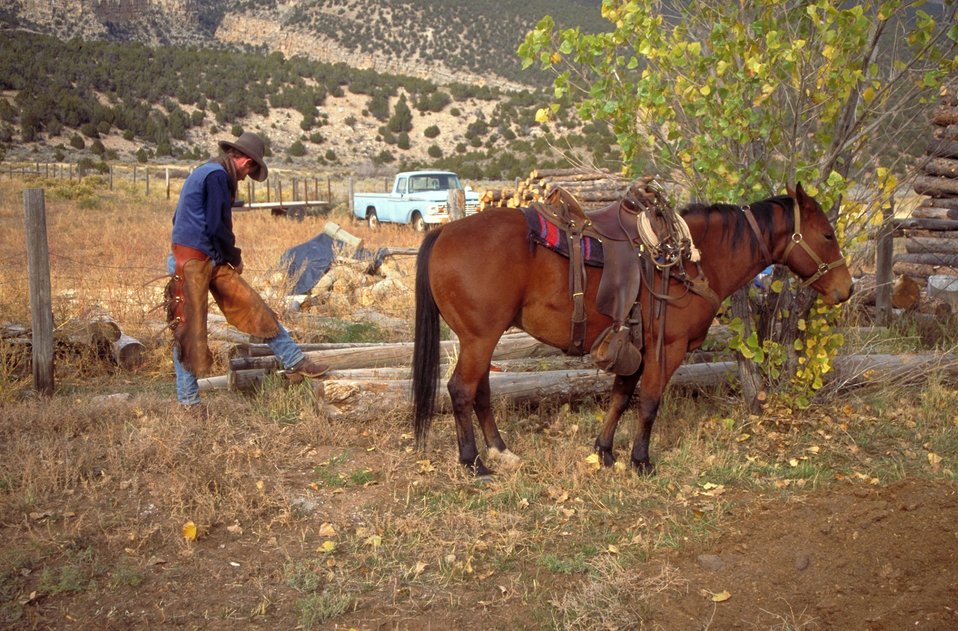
Working cowboys living near Vernal, Utah.